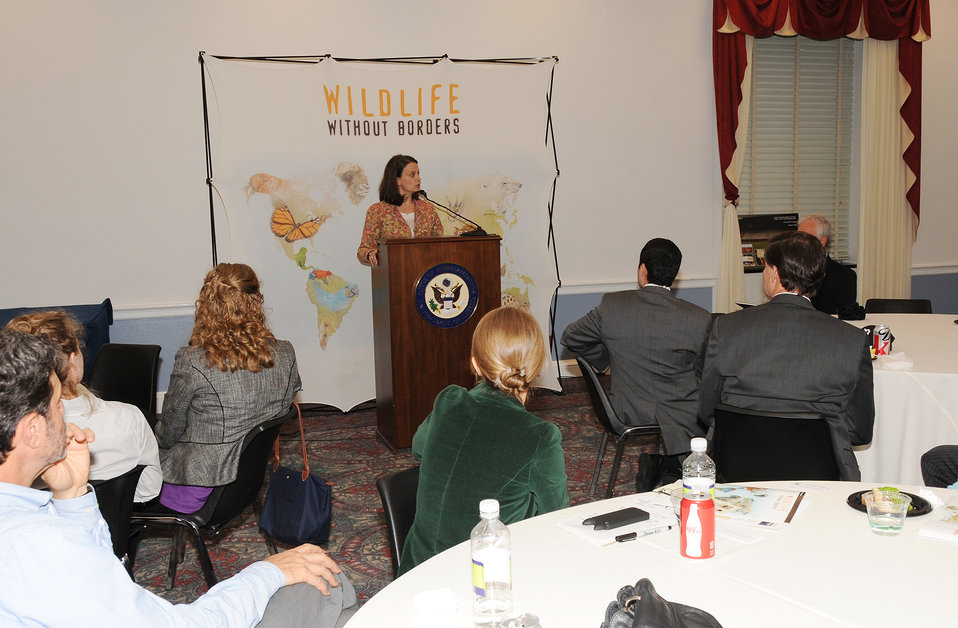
Save Vanishing Species on Capitol Hill

Katie Fronhardt